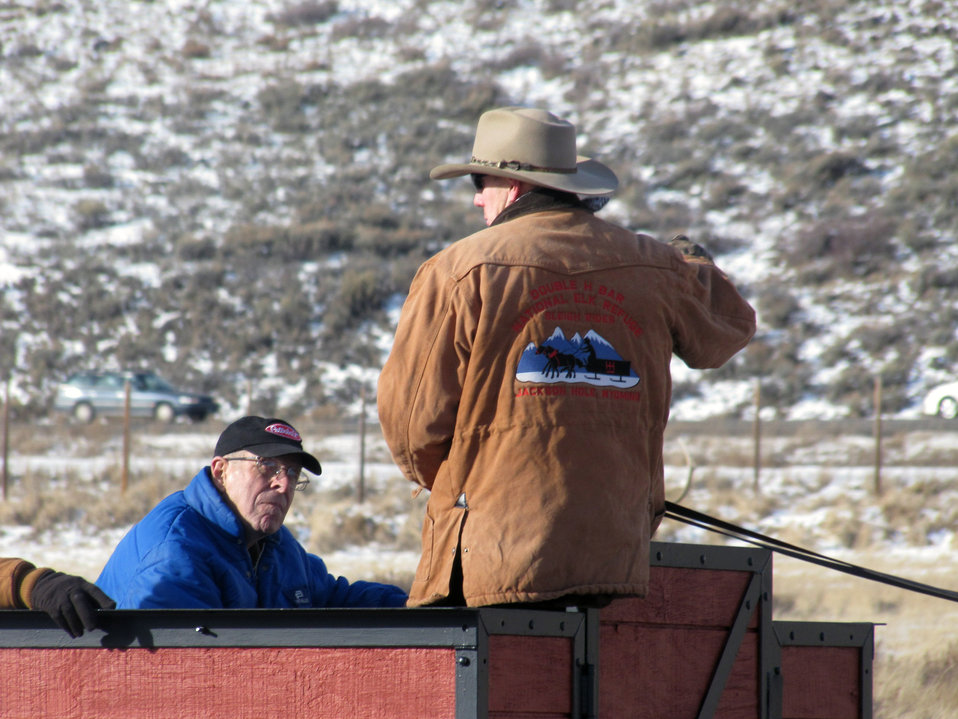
A Teachable Moment

Sleigh drivers offer a quality educational program during the ride. The contractor's staff works closely with the National Elk Refuge's visitor services staff to stay current on refuge management topics.